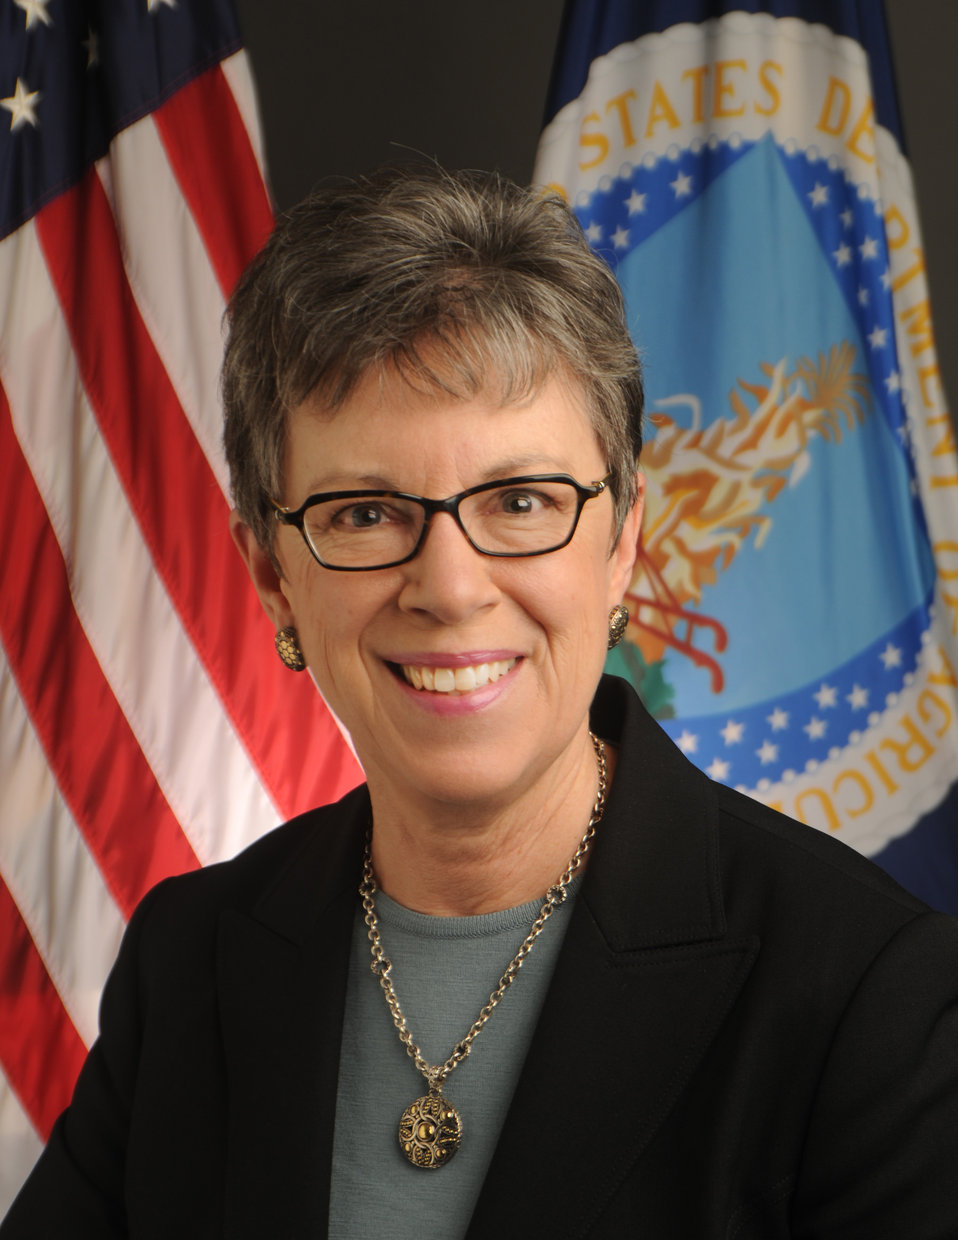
10di1115-0007 Undersecretary, Research Education and Economics Dr. Catherine Woteki

Portrait Dr. Catherine Woteki, Under Secretary for Research Education and Economics.